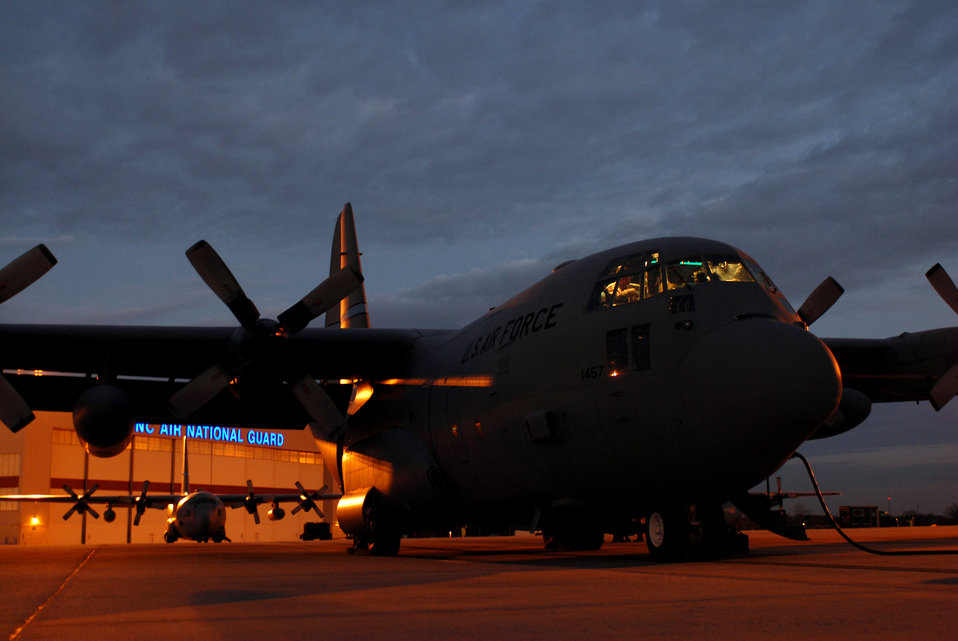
Defending freedom

Flight crew members begin to preflight a C-130 Hercules for a routine night mission for the 145th Airlift Wing of the North Carolina Air National Guard Feb. 6 at Charlotte, N.C. The aircraft is capable of operating from rough, dirt strips and is the prime transport for air dropping troops and equipment into hostile areas.